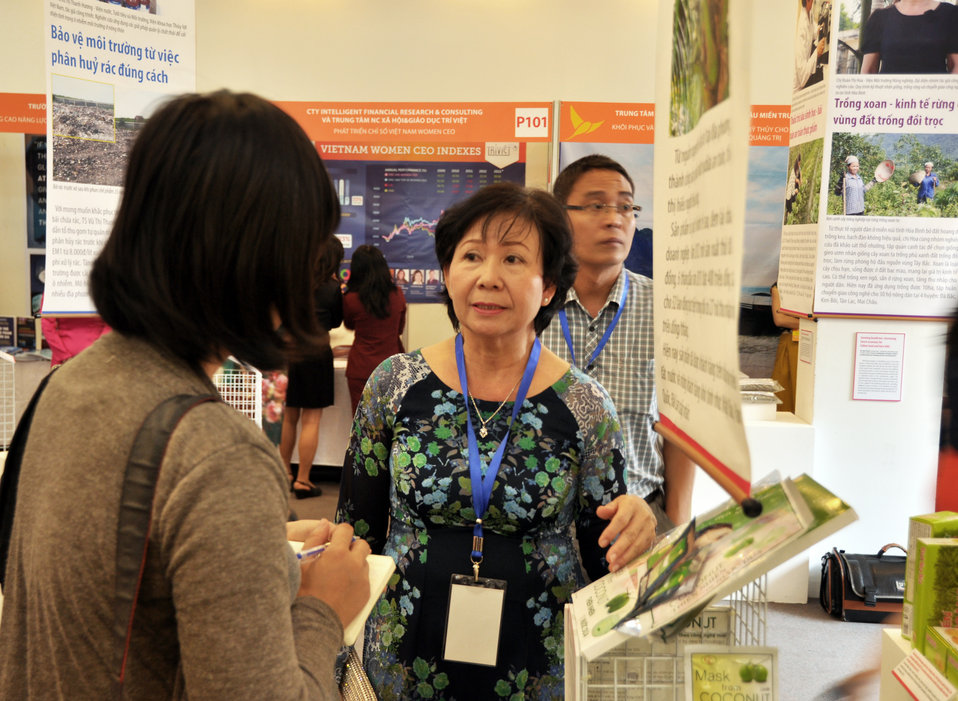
Vietnam Women Innovation Day 2013

Hanoi, October 1, 2013.